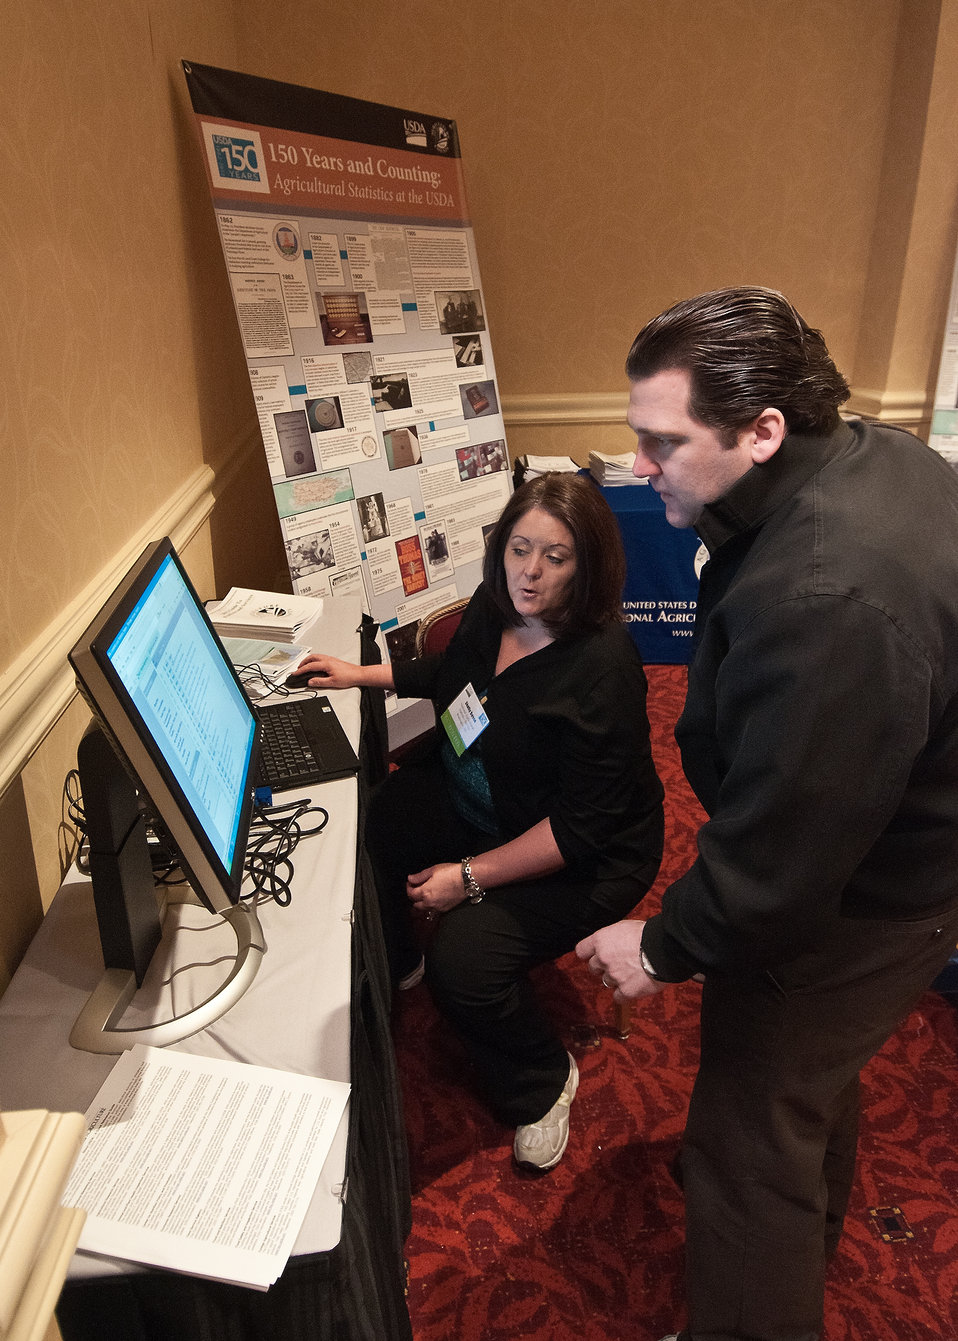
Shelly Busse (seated), National Agricultural Statistics Service explains how to find information on the agency web site to John Richards (right) a commodity trader from Mitsui, New York at the 2012 Agricultural Outlook Forum, “Moving Agriculture Forward, Growing, Innovating and Celebrating 150 Years” held at the Crystal gateway Marriott Hotel Arlington, Virginia, Friday, February 24, 2012. This year's forum coincides with the 150th anniversary of the Department of Agriculture, exhibit hall.